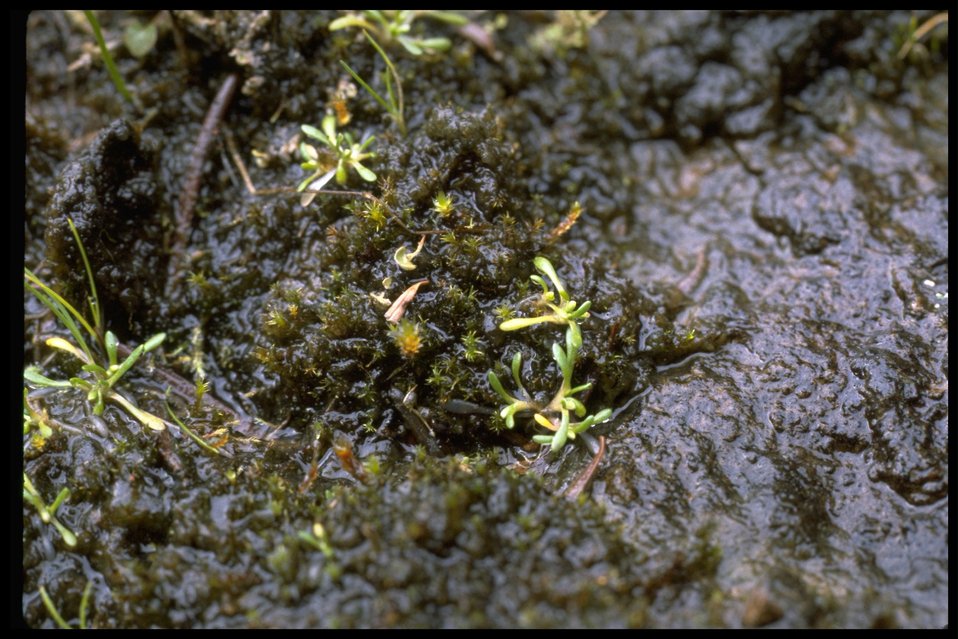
Farshot of Howell's montia (Montia howellii).